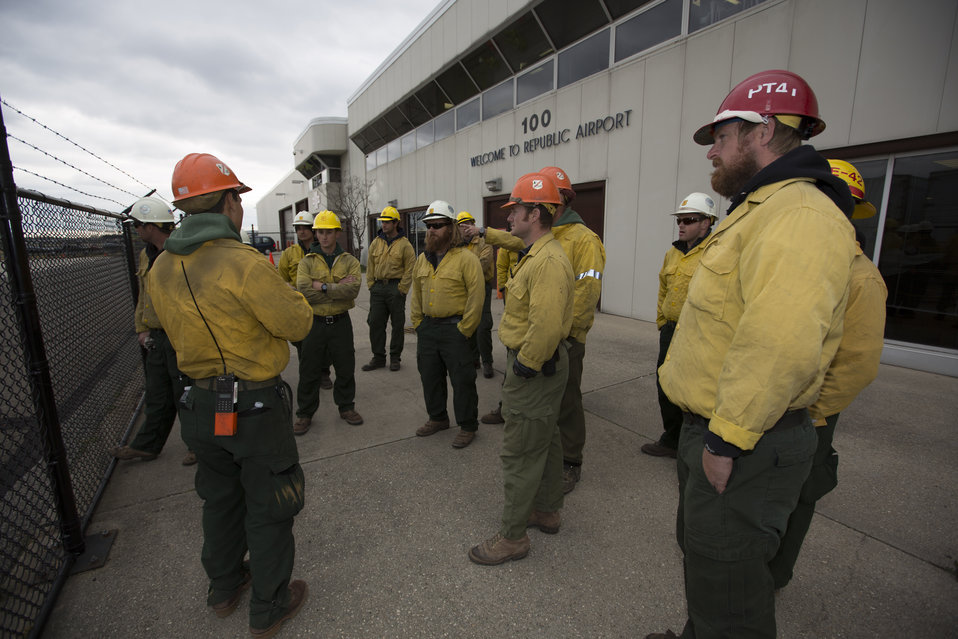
U.S. Forest Service (USFS) Hot Shots conduct a planning briefing at the Republic Airport in Farmingdale, NY on Thursday, Nov 1, 2012. The USFS is working with the Federal Emergency Management Agency (FEMA) to distribute supplies to victims affected by Hurricane Sandy. The Hot Shot crews are from the Los Padres National Forest, Santa Barbara, CA.